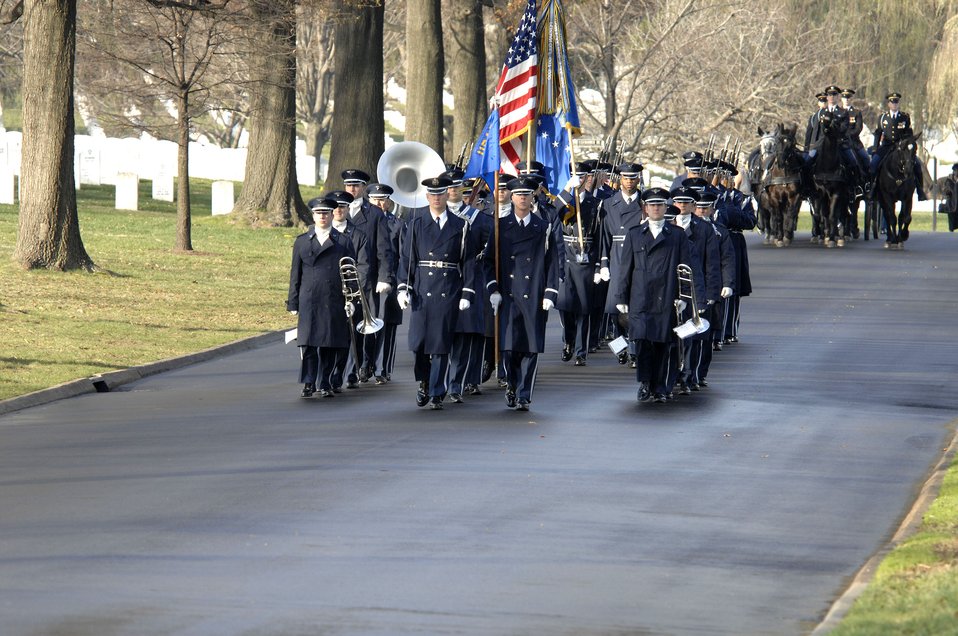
One final salute

The Air Force Band and Honor Guard lead a funeral procession comprised of the Army Cason and friends and relatives of Capt. Kermit Evans Dec. 12 at Arlington National Cemetery. The cason are transporting the body of Captain Evans while more than 200 friends and relatives follow along to pay their respects to the former member of the 27th Civil Engineering Squadron Explosives Ordnance Disposal Flight at Cannon Air Force Base, N.M. He was deployed to Iraq when the helicopter he was a passenger in made an emergency landing and crashed. He was one of the four out of 16 who were killed as a result of the crash. He is survived by his wife, Perneatha, and Kermit Jr., their 13-month-old son.